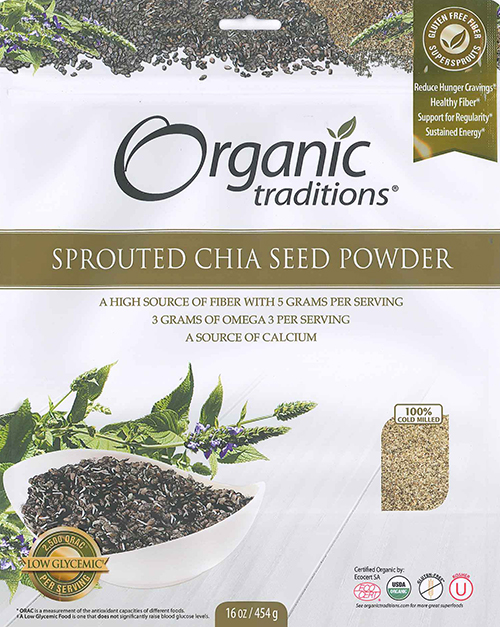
RECALLED – Chia and Flax seed powder

June 4, 2014 – Product Recall – Health Matters America, Inc, Recalls Organic Sprouted Chia Seed Powder and Sprouted Chia/flax Seed Powder Due to Possible Health Risk.